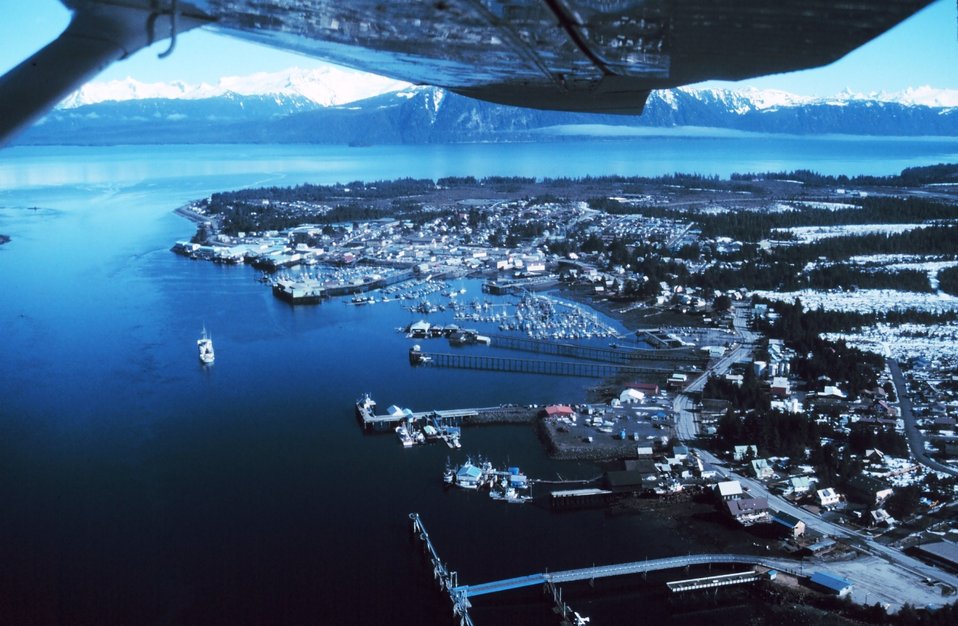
Petersburg from the air - NOAA Ship RAINIER anchored off harbor